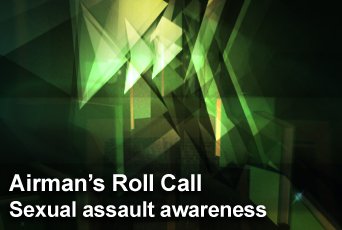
Airman's Roll Call highlights sexual assault prevention

This week's Airman's Roll Call focuses on steps Airmen, wingmen and supervisors can take to protect themselves from sexual assault.